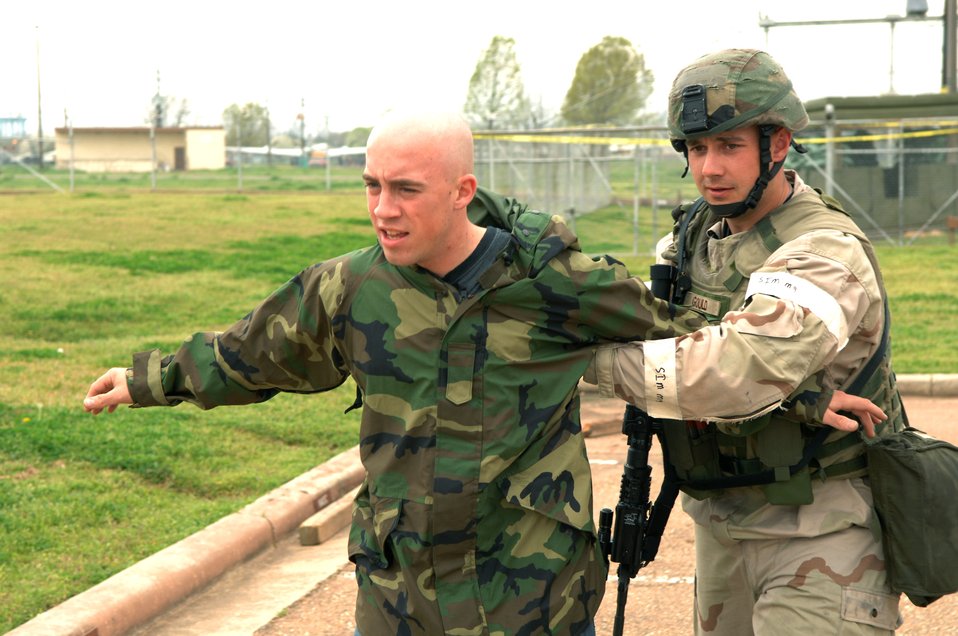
Global Cajun 07-2

Airman James Gould practices apprehension of an intruder at an entry control point during the Conventional Operational Readiness Exercise at Barksdale Air Force Base, La. Airman Gould is assigned to the 2nd Security Forces Squadron and is working in support of Global Cajun 07-2.